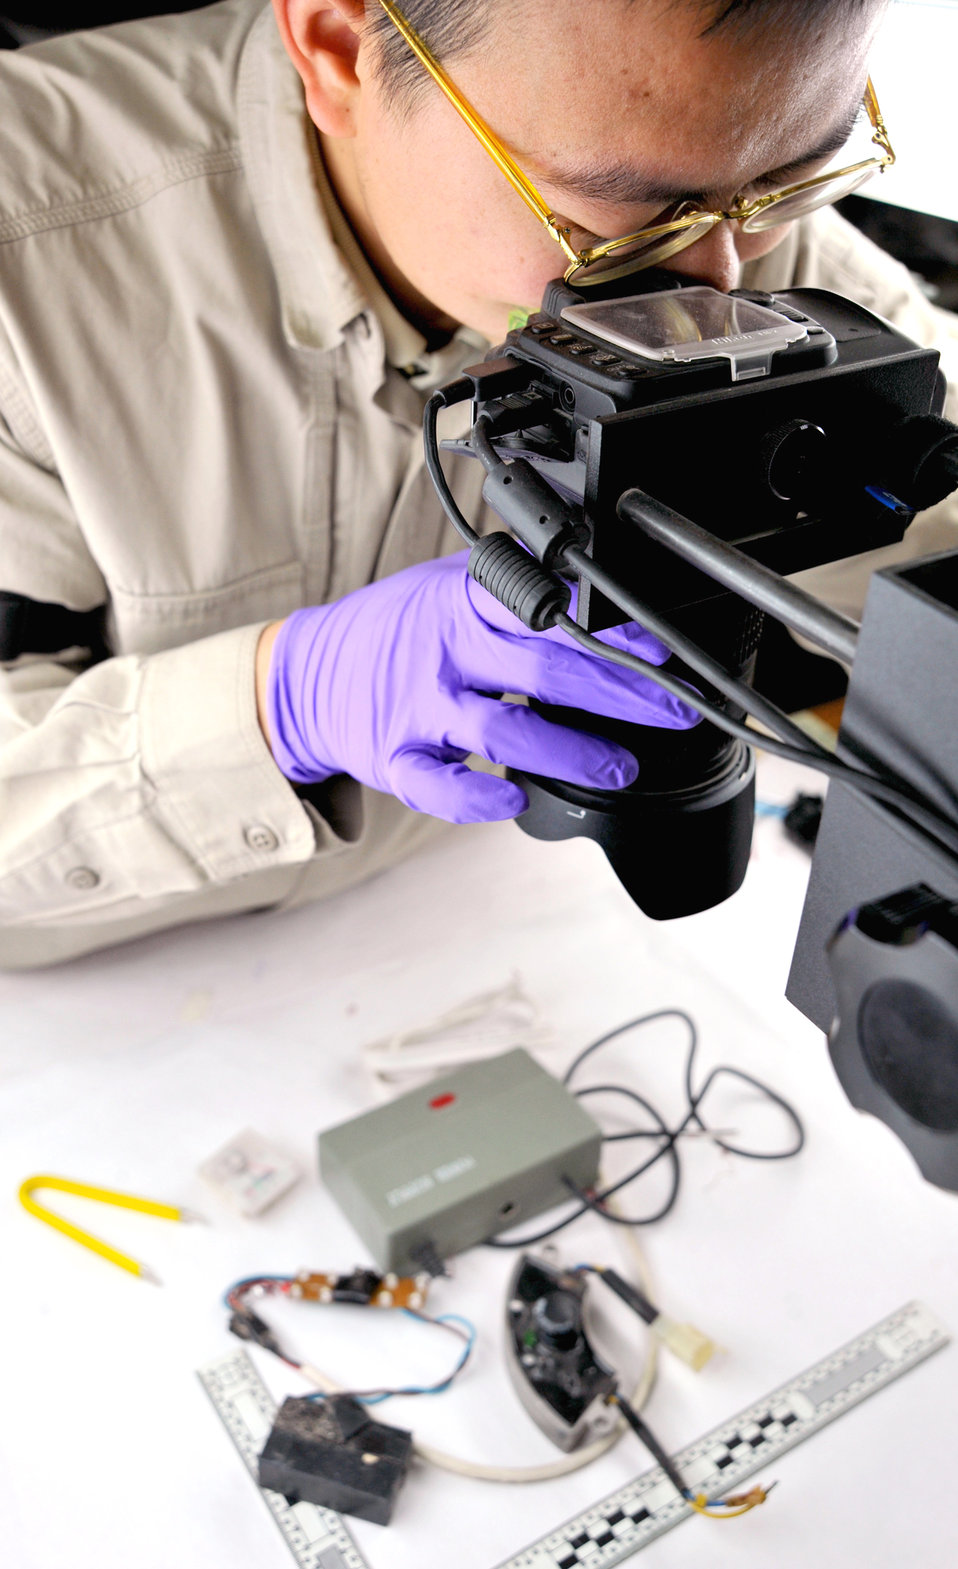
Joint task force Airmen

Robert Lee takes a photograph of a disassembled improvised explosive device Dec. 8, 2010, on Camp Victory, Iraq. Mr. Lee is a technician with the Combined Explosive Exploitation Cell electronics laboratory for Combined Joint Task Force Troy.